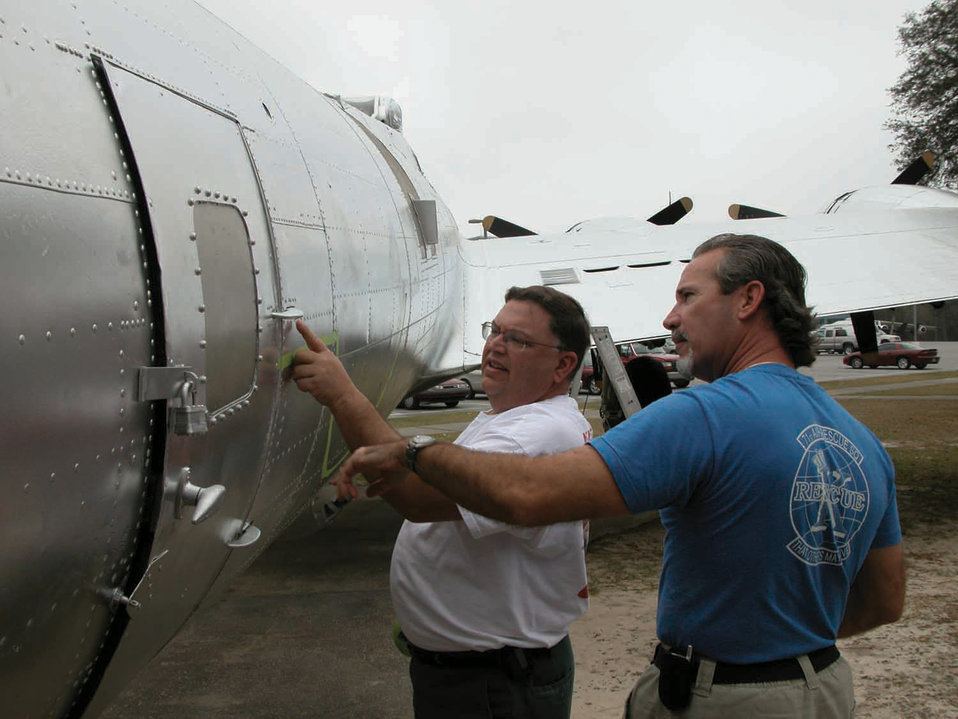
Adopt-a-plane program preserves history

EGLIN AIR FORCE BASE, Fla. -- George Jones and Tim Savoir tape an insignia on a WWII-era B-17G Flying Fortress at the Air Force Armament Museum here. Officials are looking for volunteers to restore and maintain the aircraft on display at the museum.